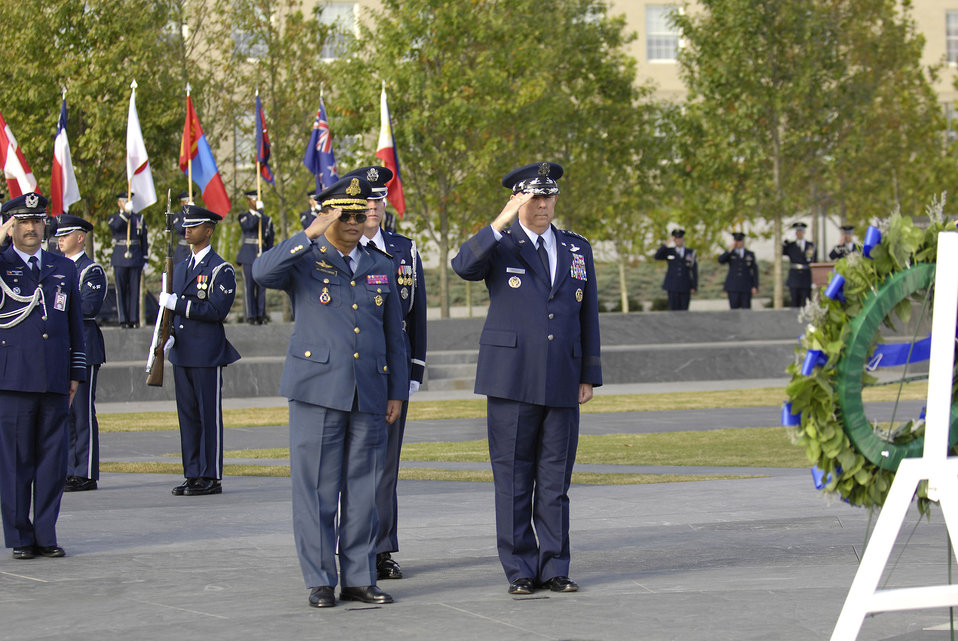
Air chiefs participate in wreath-laying ceremony

Air Force Chief of Staff Gen. T. Michael Moseley and Lt. Gen. Soeung Samnang salute during a foreign dignitary arrival and wreath-laying ceremony at the Air Force Memorial in Arlington, Va., on Tuesday, Oct. 24.